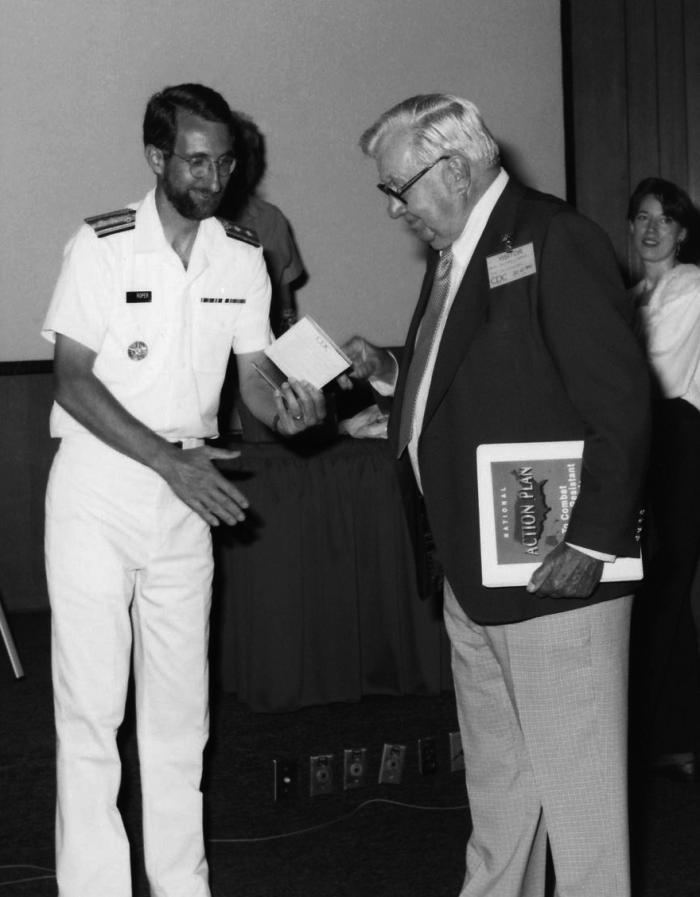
This 1992 photograph, taken during the Centers for Disease Control's 46th anniversary ceremonies, showed then organization Director, Dr. William Roper (1990 - 1993) presenting an award to former CDC Director, Dr. Robert J. Anderson (1956 - 1960).